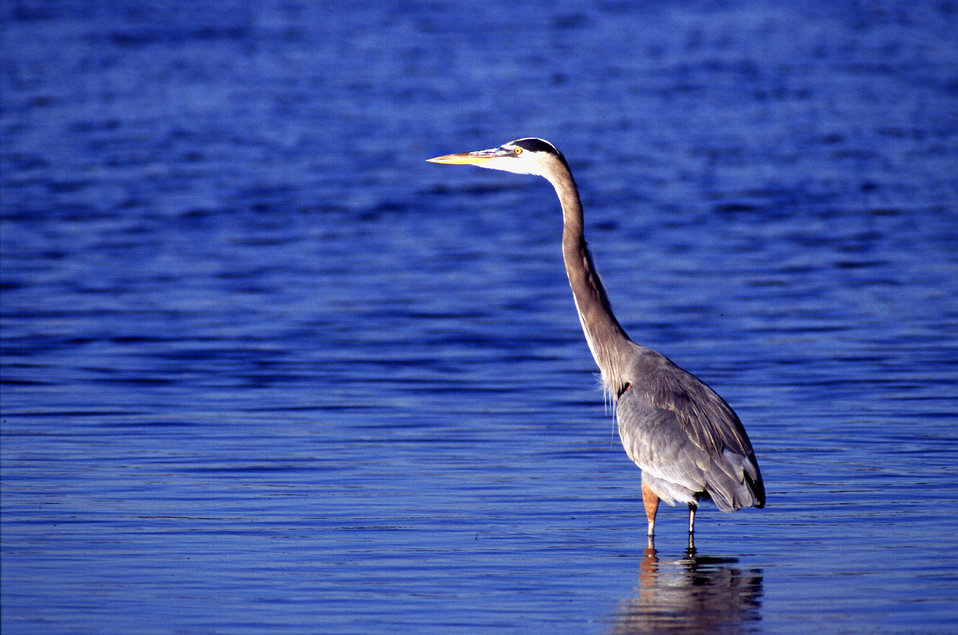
A Great Grey Heron stalks its dinner.